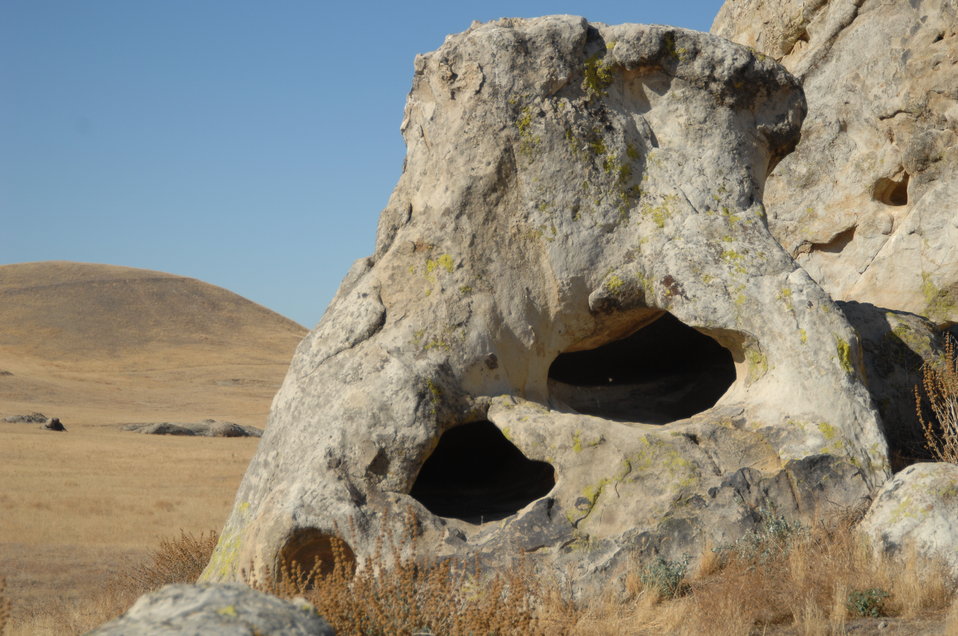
Painted Rock, Formation on the Carrizo Plain 1